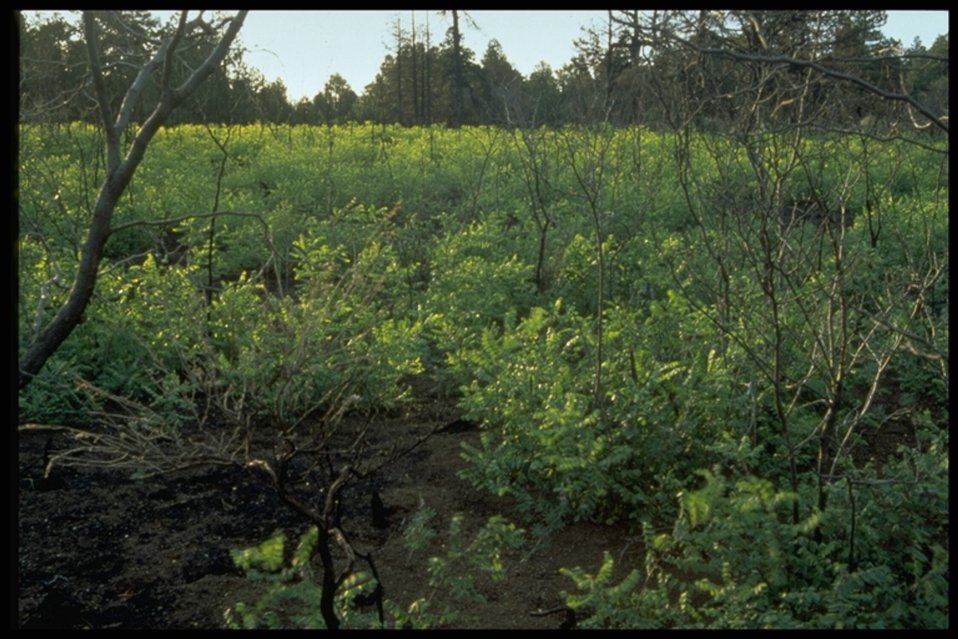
A field of green and yellow in the Grand Canyon-Parashant National Monument. This National Monument was designated by President Bill Clinton in January of 2000.